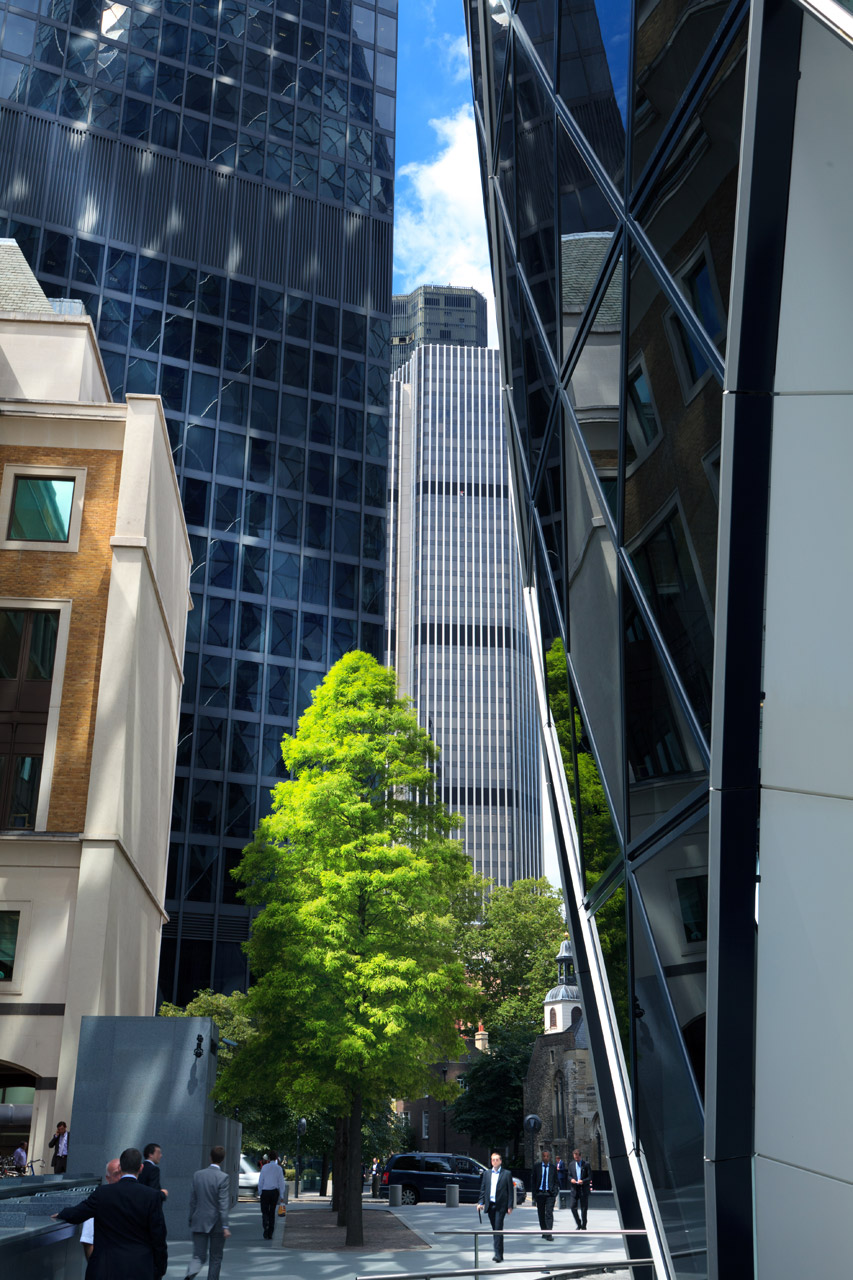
Tree and skyscrapers

Green tree among skyscrapers.